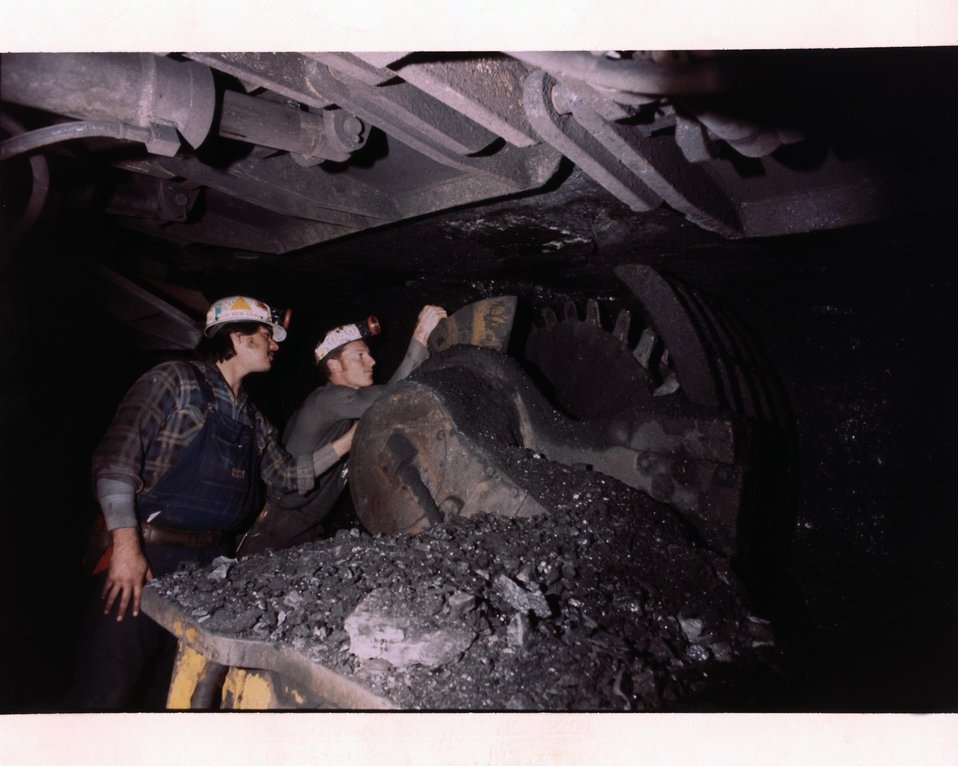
MINER IS INSPECTING EICKHOFF EDWX100L DOUBLE RANGING DRUM SHEARER.

THE SHEARER HAS 2 AIR-COOLED 100 KW MOTORS. THE LINE OF 95 FACE SUPPORTS ARE EVIDENT IN THE PICTURE. THE SHIELDS ARE DESIGNED SO THAT EXTREME POWER IS CONCENTRATED IN THE LEGS. AT A SEVEN-FOOT MINING HEIGHT, THE SHIELD CAN EXERT A THRUST OF 404 TONS AND SUSTAIN A LOAD OF 512 TONS AT YIELD.